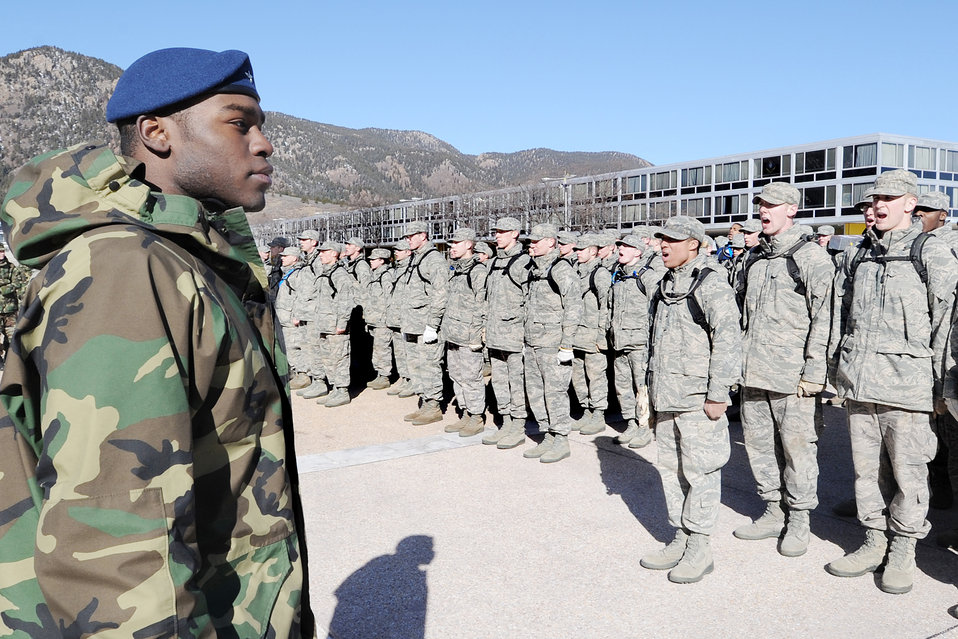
Recognition Days

Cadet junior Lamin Jackson commands the attention of a group of freshman during Recognition Days at the U.S. Air Force Academy. Colo., March 12, 2010 . Recognition consists of several days of wing and squadron-run trainings, events, and ceremonies, and concludes with the freshmen receiving the Prop and Wings insignia, signifying their acceptance into the ranks of upper class cadets.